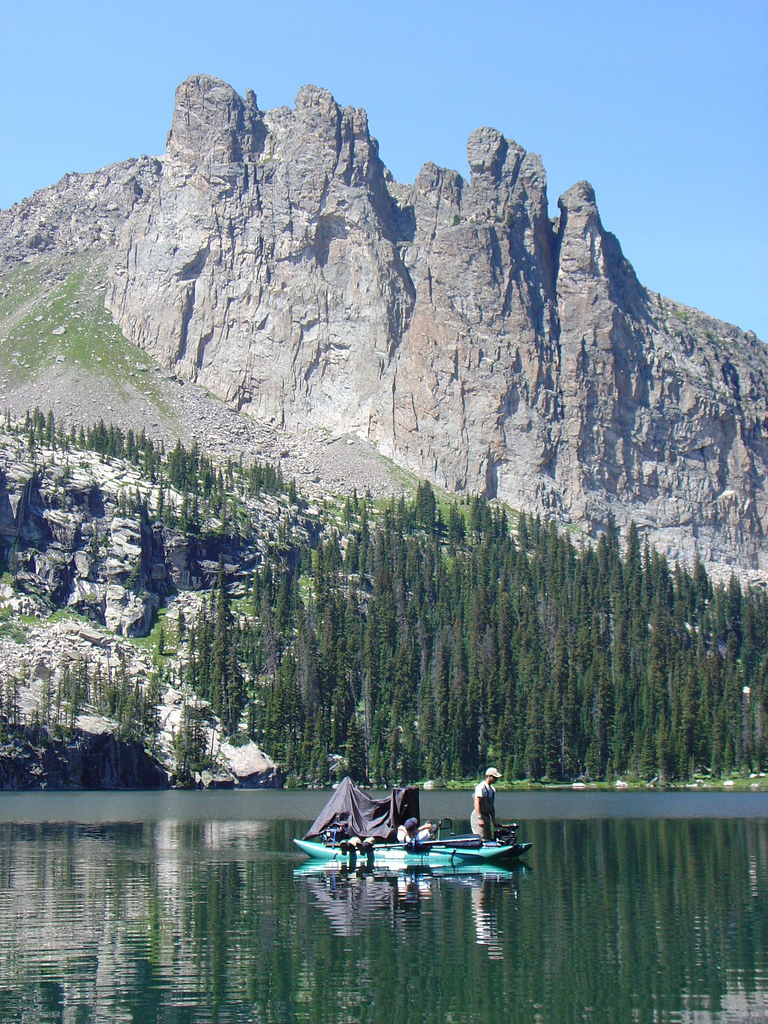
Collecting Colorado River cutthroat trout

Fish biologists with Colorado Division of Wildlife and the USFWS's Colorado Fish and Wildlife Conservation Office collect cutthroat trout from Lake Nanita in Rocky Mountain National Park. Read Mike Stempel's muse on the Western Native Trout Initiative in No Trout Left Behind at www.fws.gov/eddies. Chris Kennedy/USFWS photo.